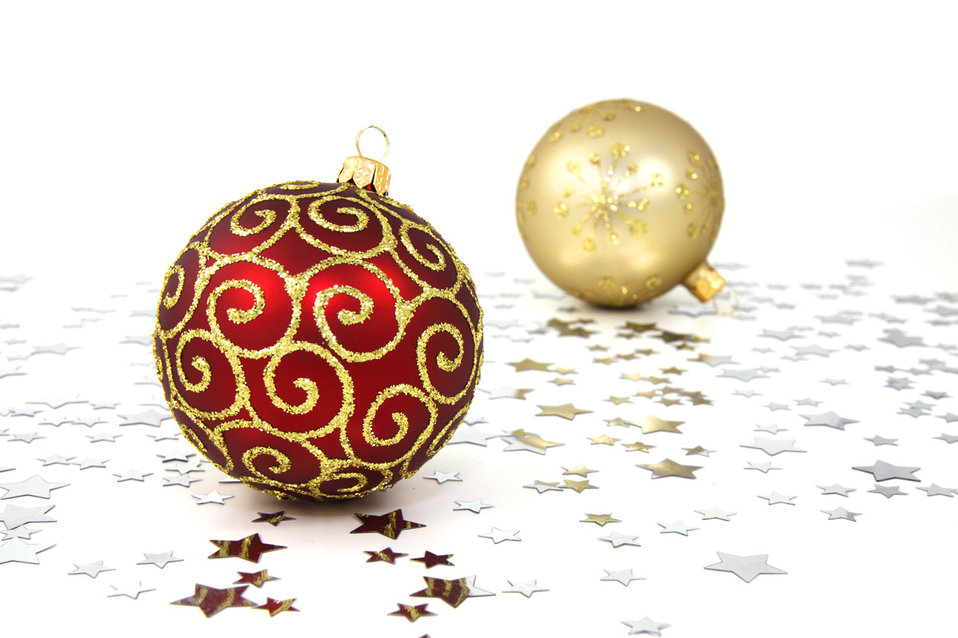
Christmas baubles

Red and golden christmas baubles.